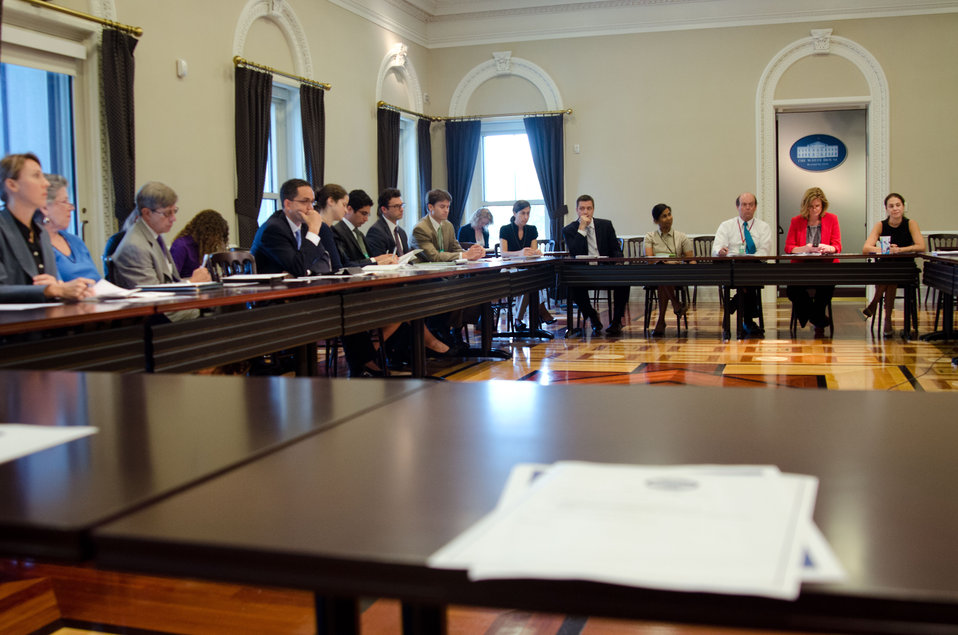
Agriculture Secretary Tom Vilsack chaired a meeting of the White House Rural Council at the Executive Office Building in Washington, D.C. on Friday, July 27, 2012 to update members and stakeholders on the Administration response to the drought and explore ways to assist American farmers and ranchers suffering in its affects.